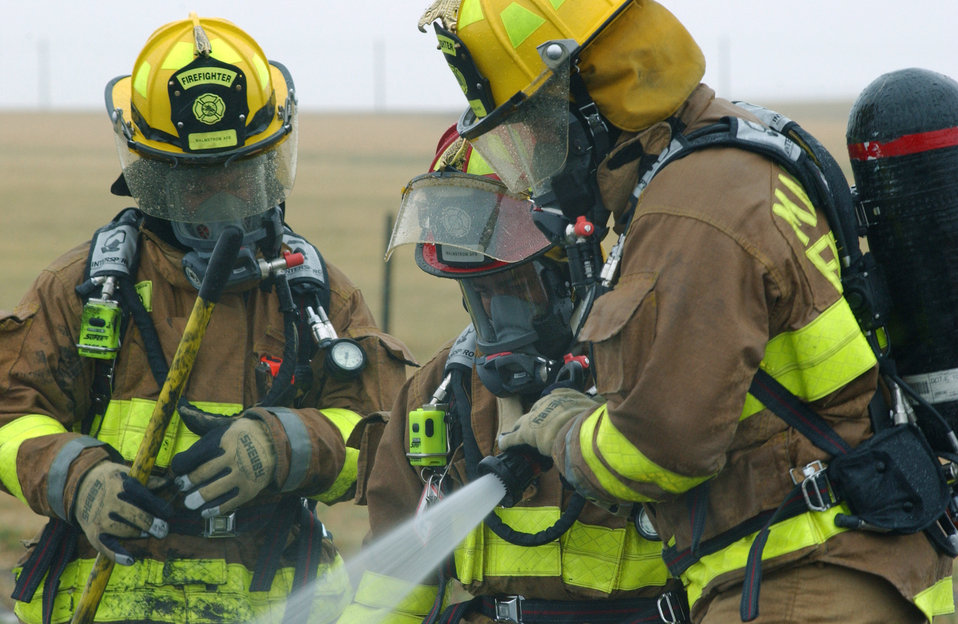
Putting out flames

MALMSTROM AIR FORCE BASE, Mont. -- Tech. Sgt. Steve Seghers (left) and Senior Airman Mike Marshall assist Staff Sgt. Adam Tisher in putting out a simulated fire during a nuclear accident response exercise here recently. The Airmen are assigned to the base fire department.